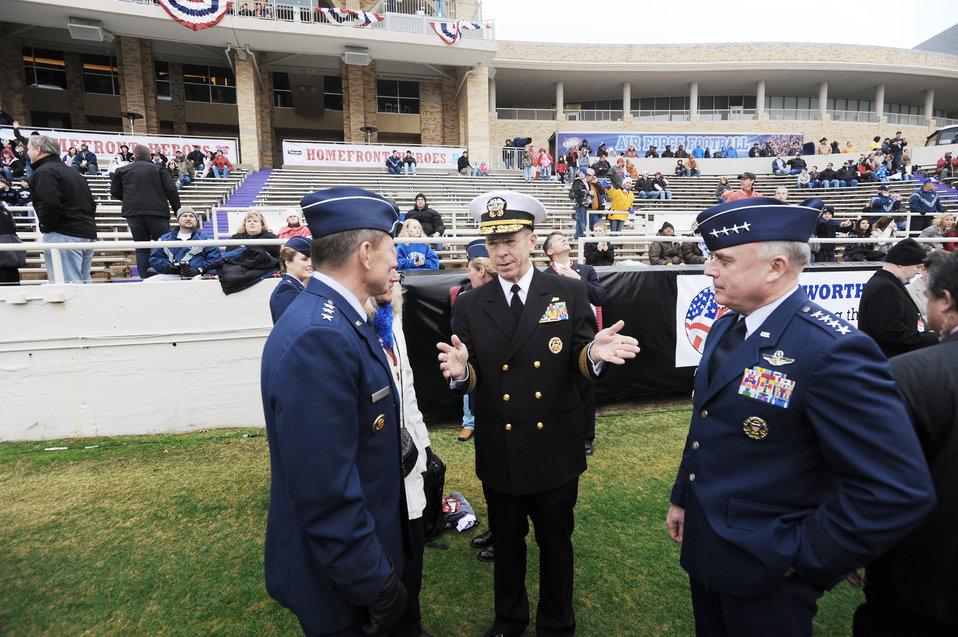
Armed Forces Bowl

Adm. Mike Mullen, chairman of the Joint Chiefs of Staff, chats with Gen. Howie Chandler (right), Air Force vice chief of staff, and Lt. Gen. Mike Gould, superintendent of the Air Force Academy, and his wife Paula Dec. 21, 2009, right before the Armed Forces Bowl kickoff in Fort Worth, Texas. The Air Force Academy Falcons triumphed over the University of Houston Cougars, 41-20.